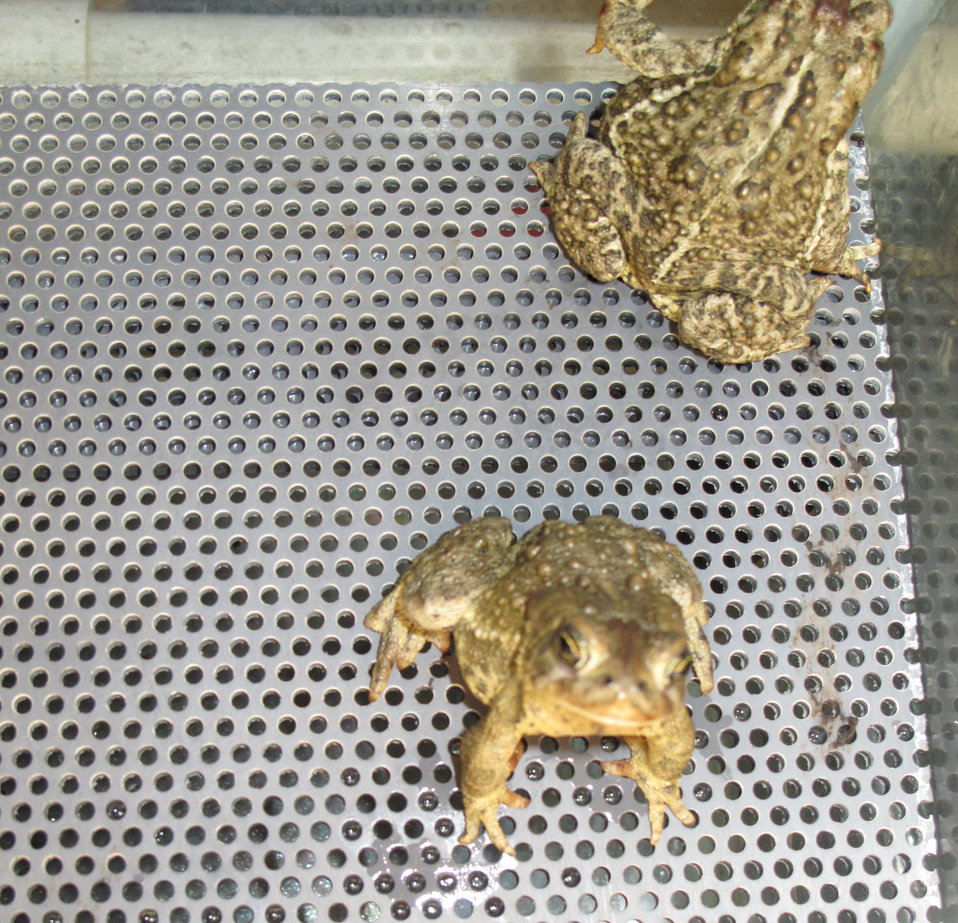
Wyoming Toads

Possible causes of decline are: Spraying insecticides to control mosquitoes, change in agricultural activities, increased predation, disease and climate change and most recently discovered is the chytrid fungus. This fungus has been reported in the captive and wild populations.